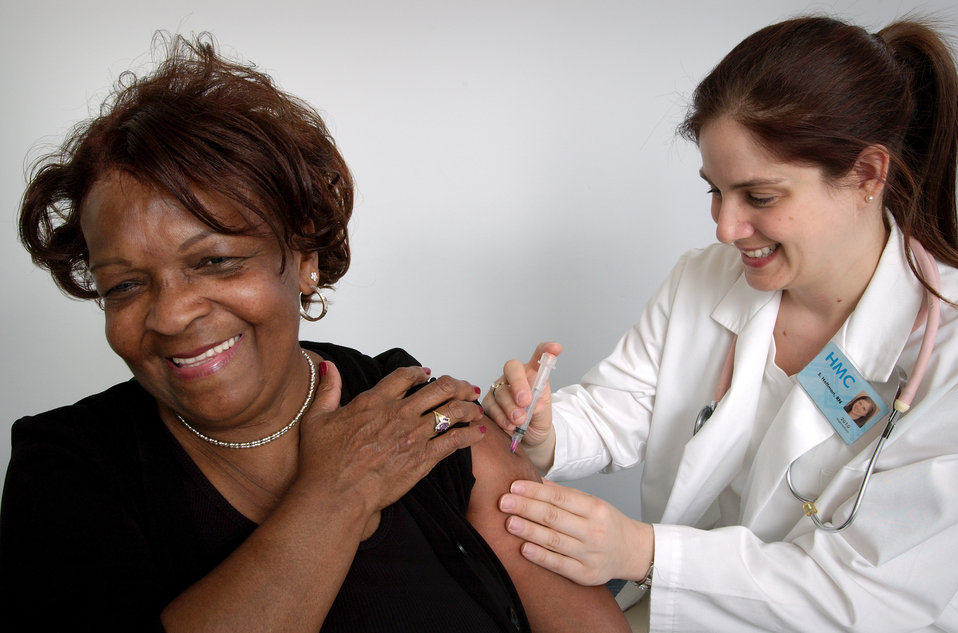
Depicted here in this 2006 image was a middle-aged woman who was in the process of receiving an intramuscular injection from a qualified nurse. The nurse had chosen the woman's left shoulder muscle as the injection site, and was using her left hand to stabilize the area.